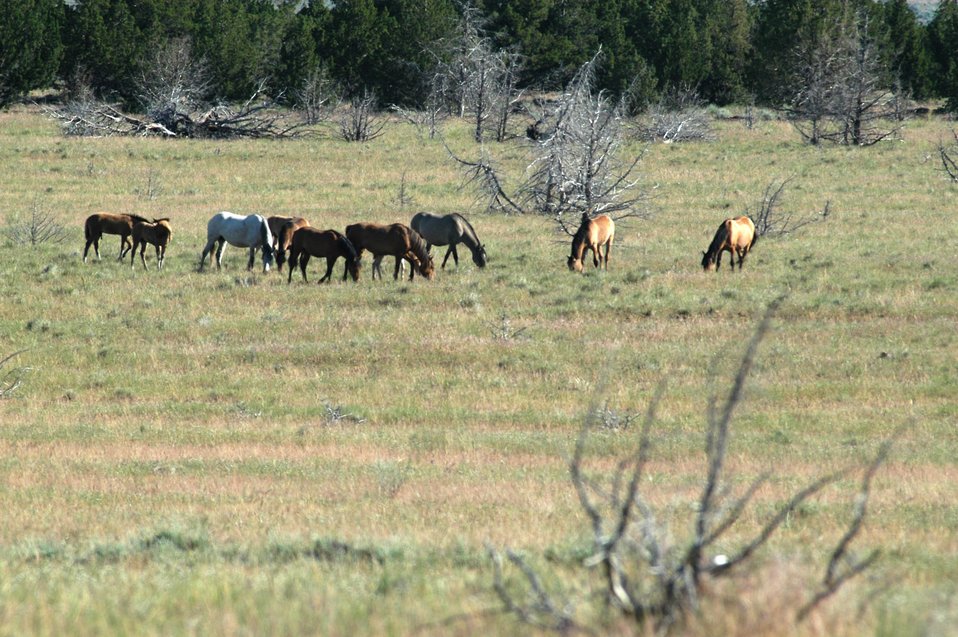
Kiger horses roam the plateaus of the Kiger Wildhorse Herd Management Area near Steens Mountain in Southeastern Oregon.